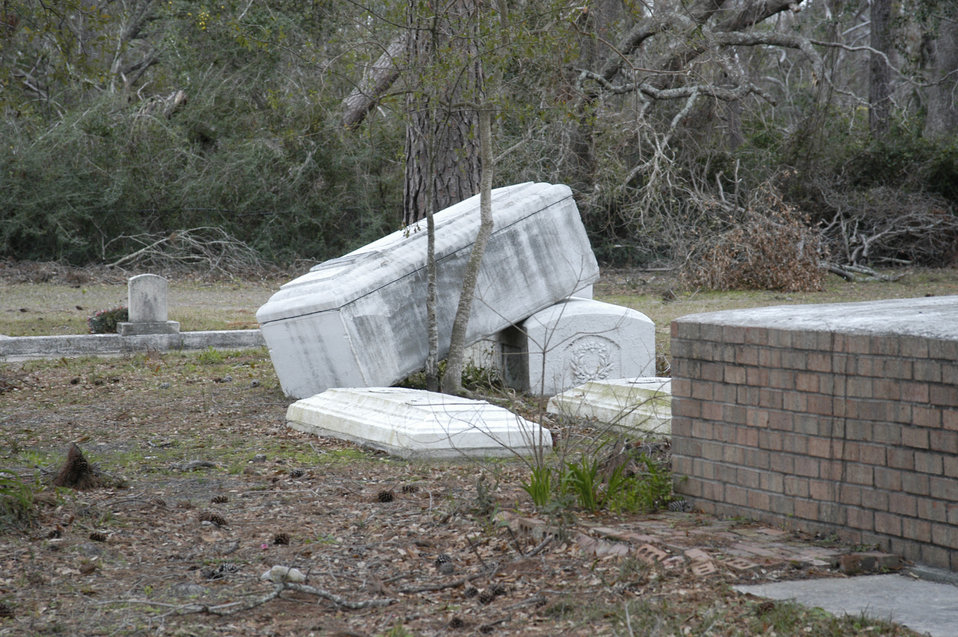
Cemeteries surrounding New Orleans, LA, had crypts ripped from their foundations and the encased remains were swept away by the 20-foot storm surge from Hurricane Katrina. Hurricane Katrina was the 6th strongest hurricane in U.S. history and the 5th deadliest. Katrina made landfall on Monday morning, August 29, 2005 as a Category 3 hurricane with sustained winds of 125 mph with over a 20-foot storm surge. Katrina caused catastrophic damage over 90 thousand square miles across Louisiana with an estimated $75 billion dollars in damage. The total economic impact to the Gulf Coast was estimated at over $150 billion. 80% of New Orleans, LA, was underwater with some areas more than 20 feet deep. Less than a month later southern Louisiana was struck by a second Category 3 hurricane Rita inflicting more damage in the southwestern areas of Louisiana adding an addition $12 billion worth of damage to the already beleaguered state. The U.S. Army Corps of Engineers (USACE) under the auspices of FEMA was the lead service in providing assistance to the citizens of Louisiana. The U.S. Department of Agriculture (USDA) supplied emergency food aid, emergency loan assistance to farmers and home owners, and USDA personnel from around the nation volunteered their time and muscle to aid in the recovery operations.